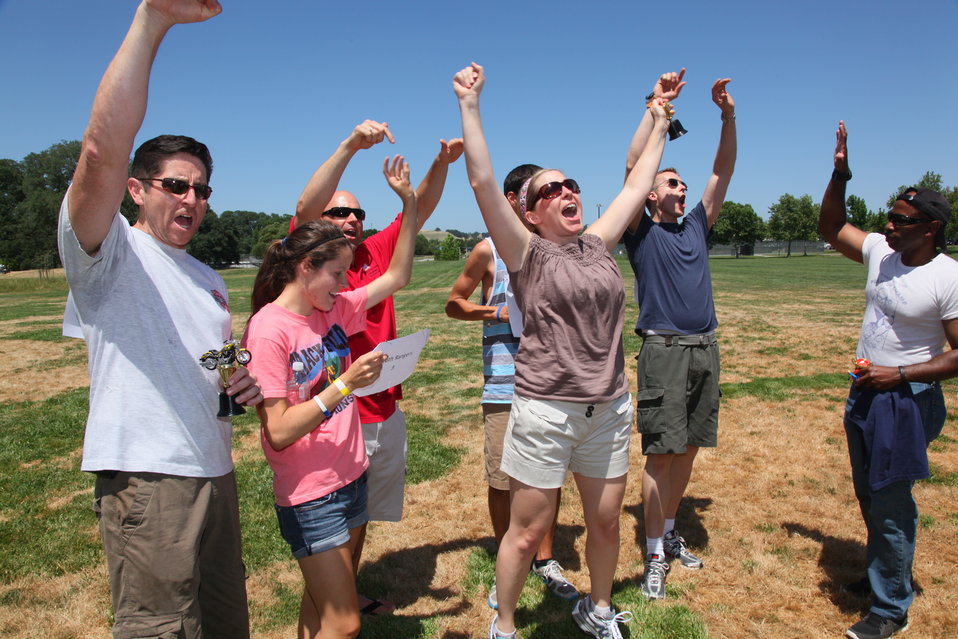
2011 Annual Picnic

U.S. Army Corps of Engineers Sacramento District public affairs office exalts as they continue their dominance of the Corps Olympics.